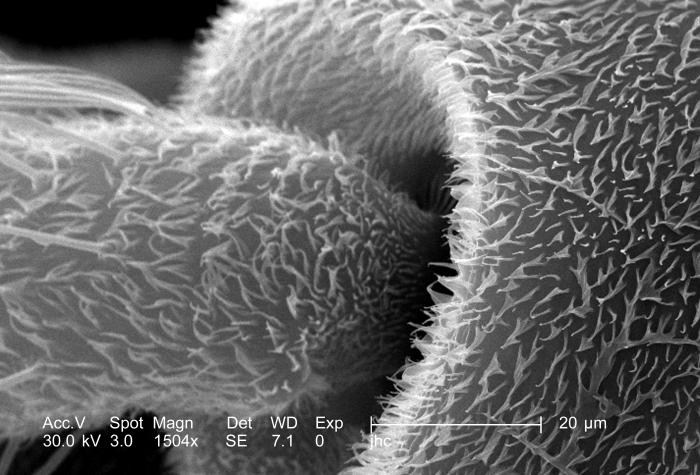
At a magnification of 1504x, approximately four times greater than PHIL 8789, this scanning electron micrograph (SEM) revealed some of the morphologic features of an Anopheles dirus mosquito's antennae. In this particular view, only the first two segments of the left antenna are visible, however, the antennae are composed of three basic segments: the proximal 1st segment known as the "pedicel" (seen here at Rt), the middle segment, or "scape" (Lt), and the third multi-segmented region known as the flagellum (not visible).Covered with sensorial "hairs", which aren't really hairs at all, but exoskeletal chitinous extensions, known as "setae", they provide feedback to the mosquito as to chemical, thermal, and tactile changes in its environment.